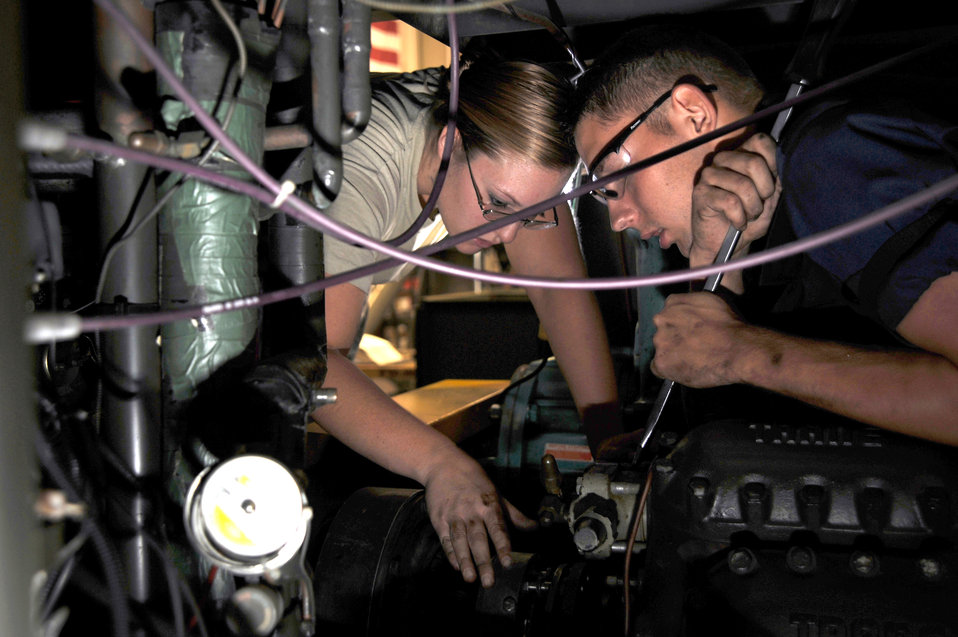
It's this bolt

Senior Airman Elizabeth Shook and Airman 1st Class John McLaughlin change the clutch on an air conditioner Aug. 18, 2010, at Whiteman Air Force Base, Mo. The Airmen are aerospace ground equipment technicians with the 509th Maintenance Squadron.